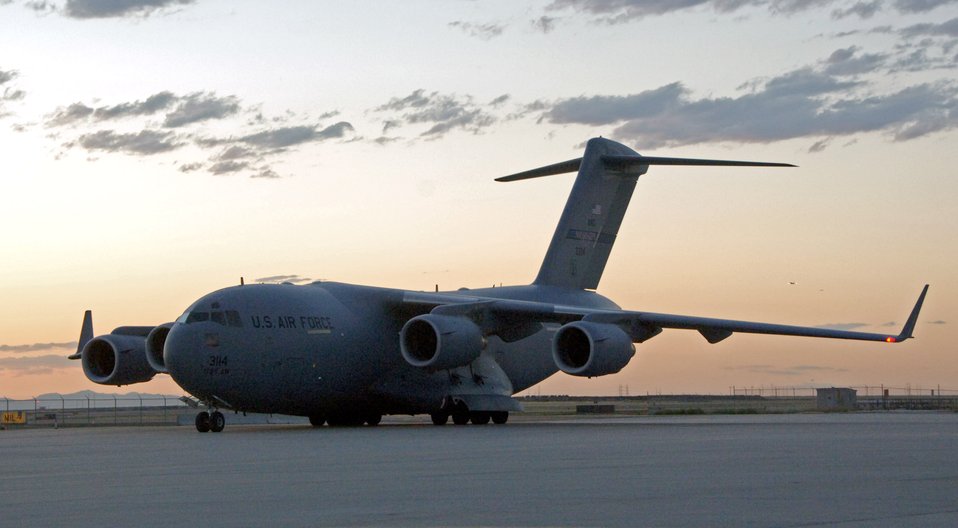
Air National Guard assists with Utah mining rescue

Airmen from the 151st Air Refueling Wing in Salt Lake City assisted in the arrival of a C-17 Globemaster III from the 172nd Airlift Wing of the Mississippi Air National Guard Aug. 9. The C-17 transported equipment used by Substrata Camera Services of Knoxville, Tenn., from its location in Topeka, Kan., to assist in rescue operations for six stranded Utah miners.